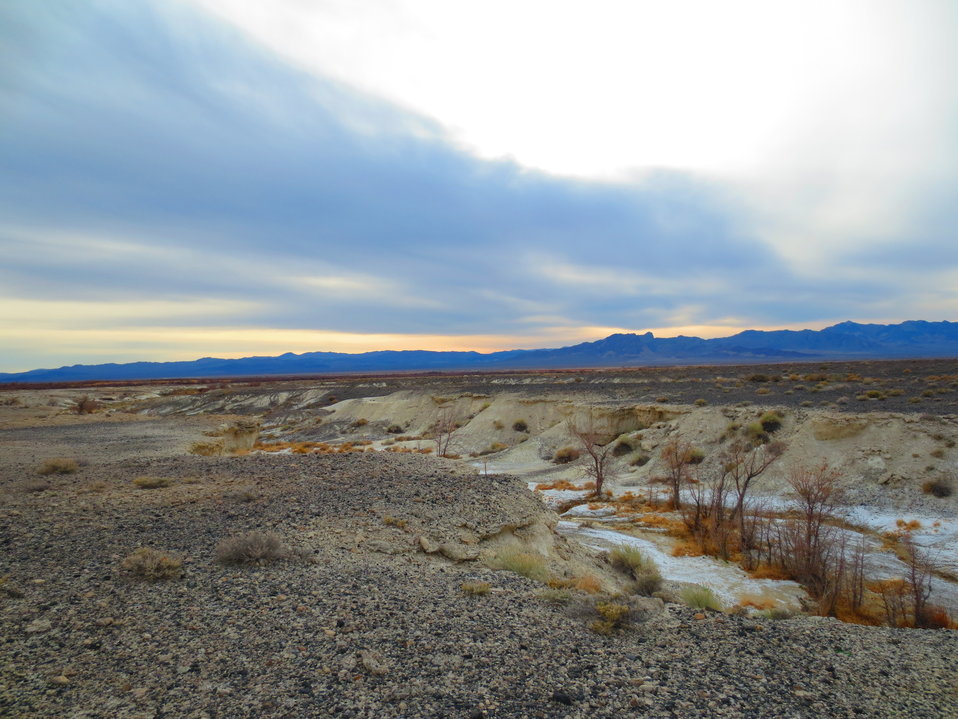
Collins Ranch portion of the refuge at sunset.